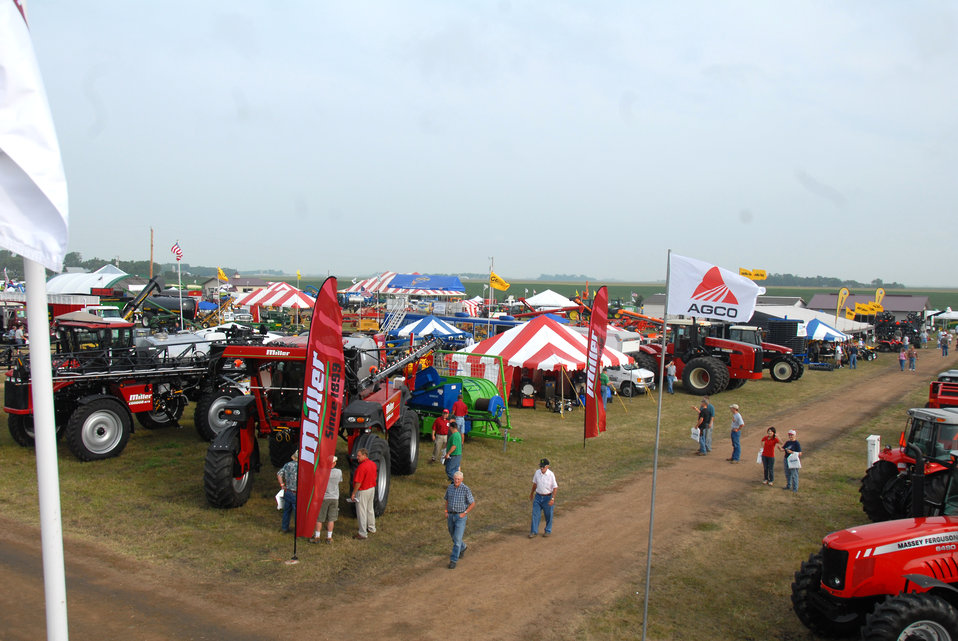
Tractors, loaders, tillage equipment and other types of agricultural farm machinery are displayed at the Minnesota Farmfest in Redwood County, Minnesota on August 7, 2007. Farmfest is one of the largest agricultural events in the world and it brings the best products and services to an audience that is drawn from every Minnesota County and has many visitors from five neighboring states.